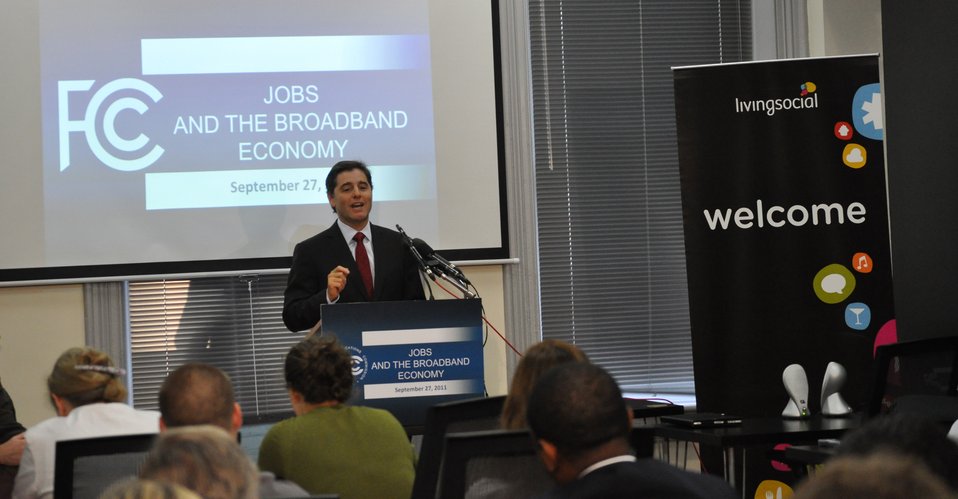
Jobs and the Broadband Economy

FCC Chairman Genachowski